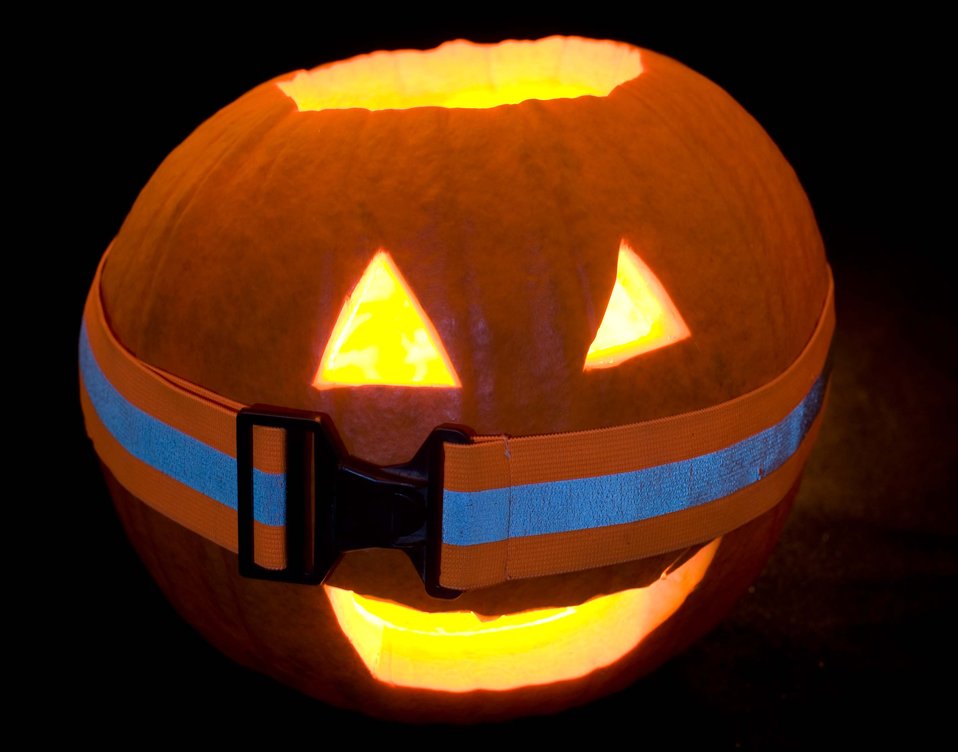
Be safe on Halloween

Freddy, the 1st Fighter Wing Public Affairs' jack-o'-lantern, dons a reflective belt in preparation for a safe Halloween at Langley Air Force Base, Va.